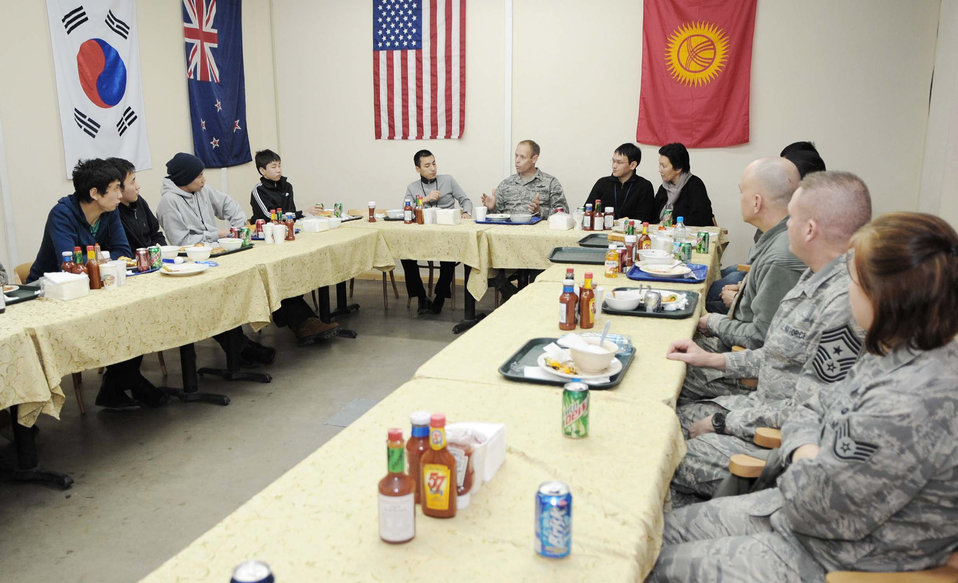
Kyrgyz community tour Transit Center at Manas

Col. Blaine Holt, 376th Air Expeditionary Wing commander, talks with members of the National Democratic Institute of Kyrgyzstan, who toured the Transit Center at Manas, Kyrgyzstan, Feb. 6, 2010, to get a better idea of the operations U.S. and coalition forces conduct here.